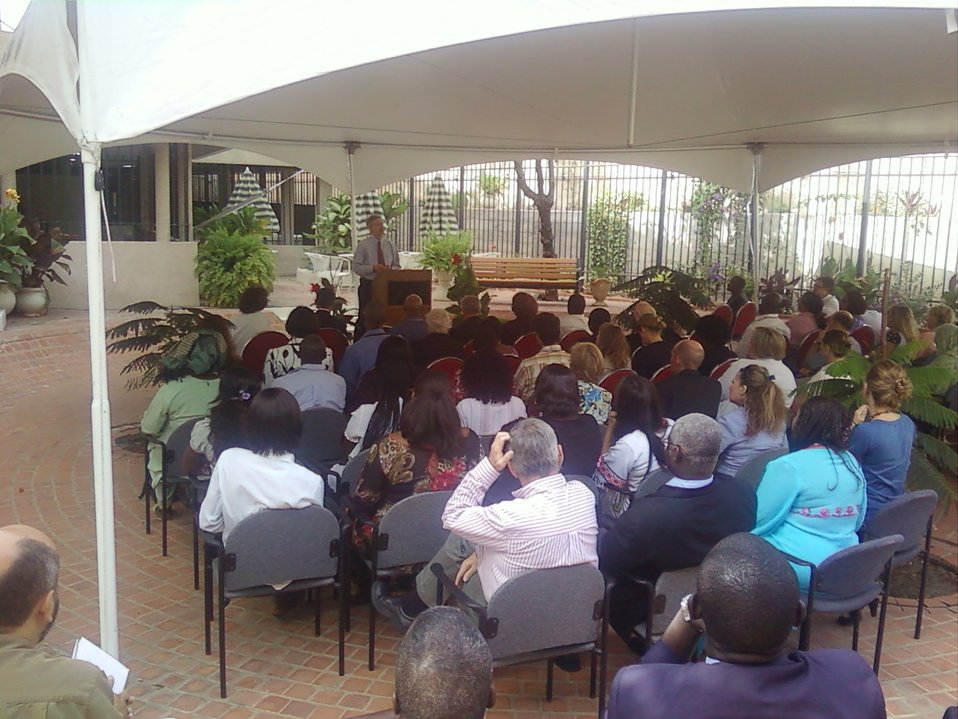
Under Secretary Burns Holds Town Hall in Senegal

Under Secretary for Political Affairs William J. Burns holds a town hall in Dakar, Senegal, April 20, 2010.